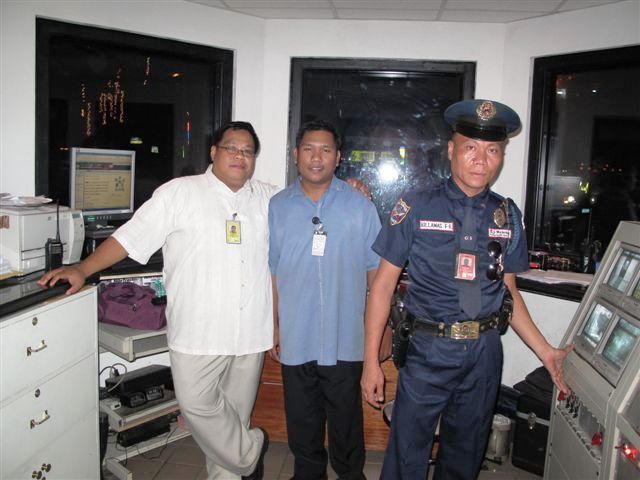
July 4th Celebration at U.S. Embassy in the Philippines

U.S. Embassy Manila staff members attend a J-4 event in Manila, Philippines, on July 1, 2010.